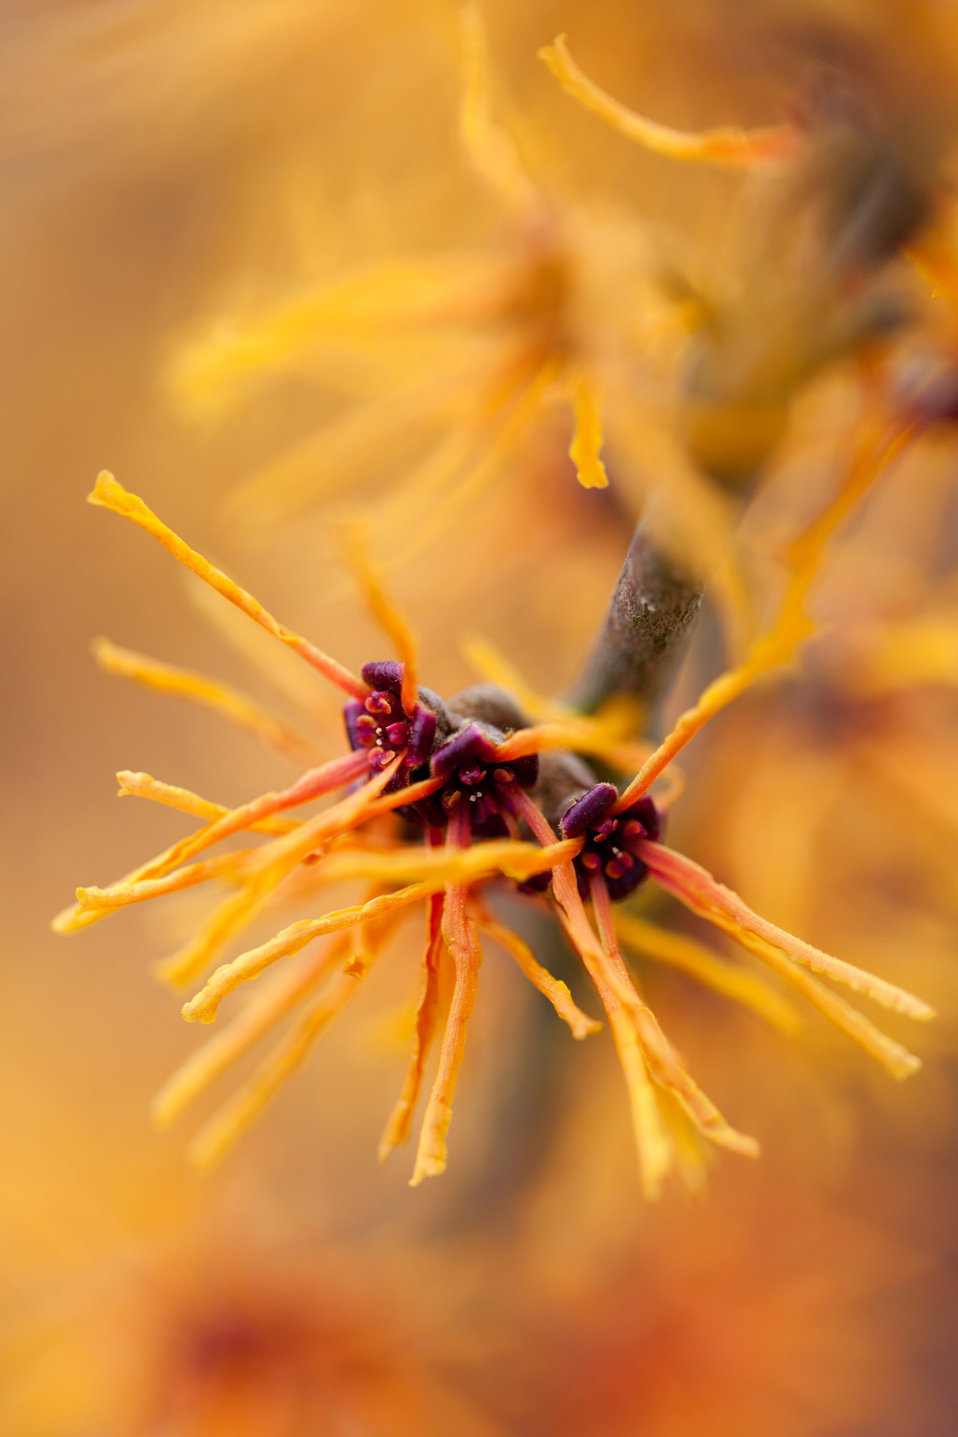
Orange blooming bush

Macro photo of a orange blooming bush.